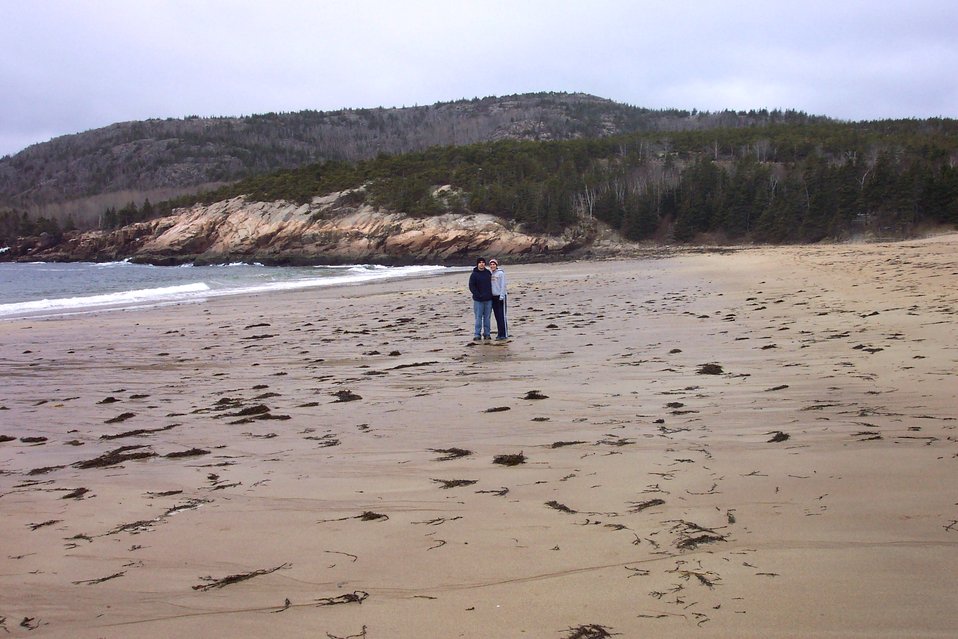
A spring morning at Sand Beach.